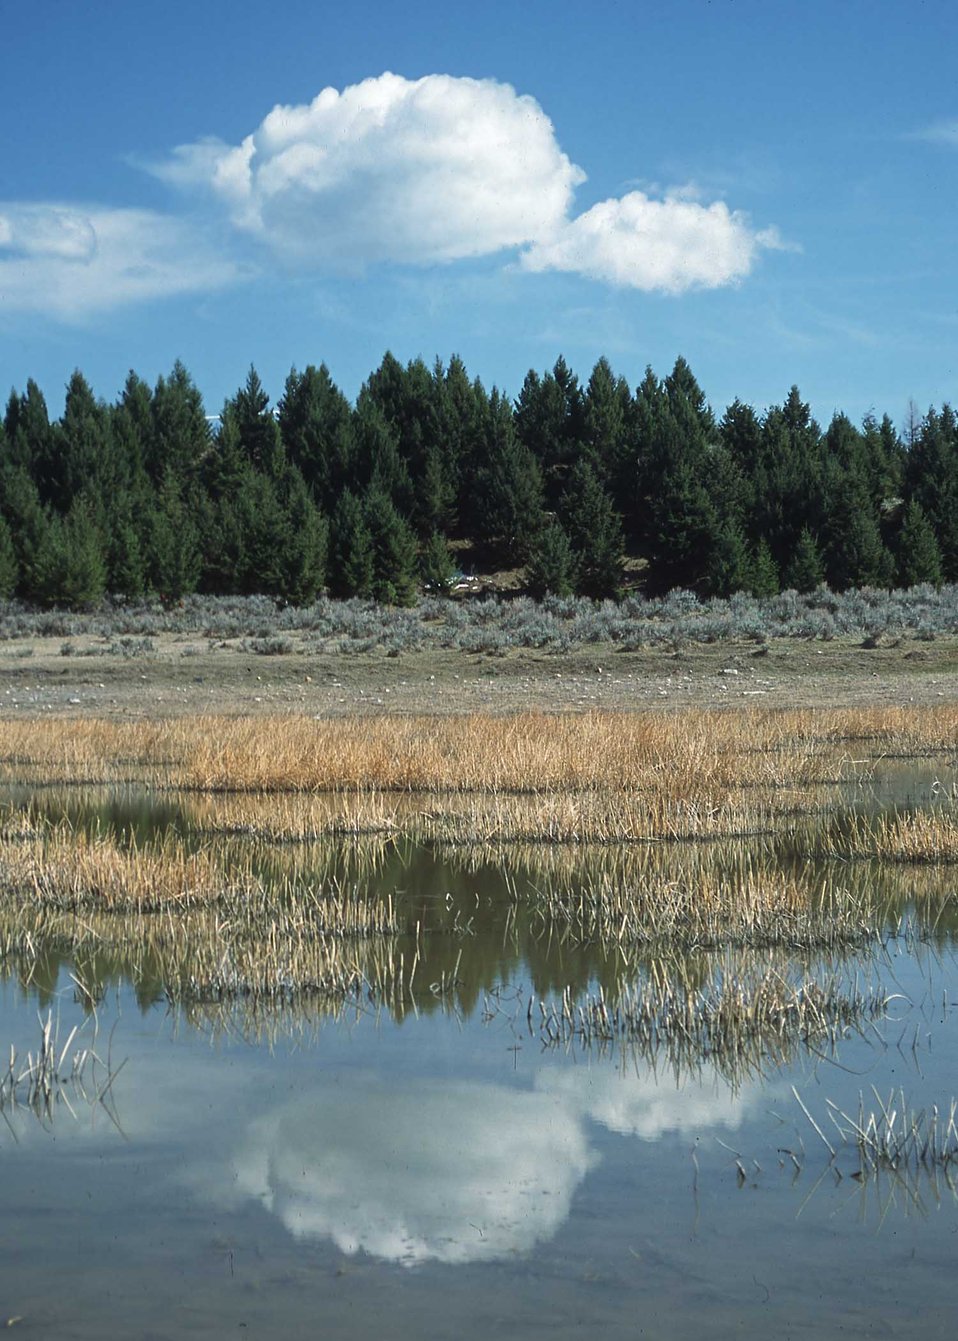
Wetland in Powell County, MT.